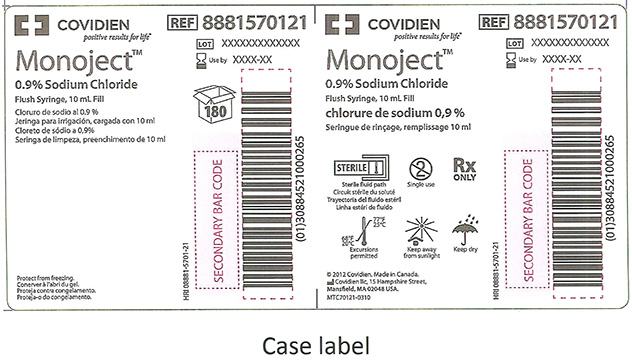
RECALLED – Monoject Prefill Flush Syringes

August 19, 2013 – Product Recall – Covidien Initiates a Voluntary Recall of Certain Lots of Monoject™ Prefill Flush Syringes Sold in the United States and Bermuda. For additional information, please refer to the company
issued press release available on FDA’s web site at www.fda.gov/Safety/Recalls/UCM365577.